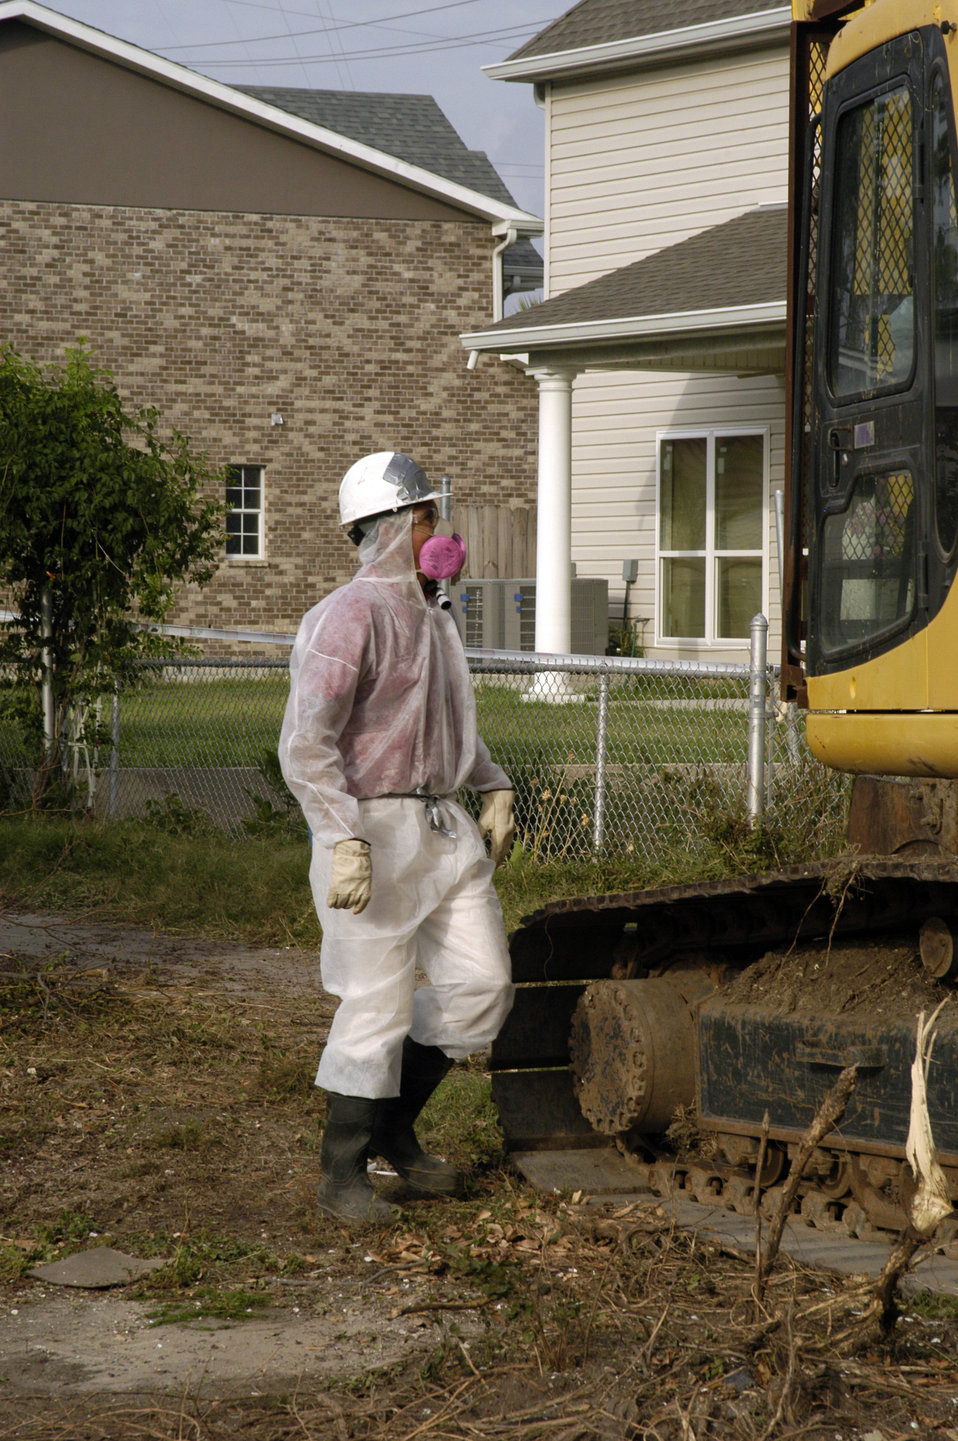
Many of the older homes and buildings in the New Orleans, LA, locale that were destroyed by Hurricane Katrina contained asbestos material (i.e. asbestos roofing tiles, transite siding, insulation, floor tiles, and popcorn ceilings). The U.S. Army Corps of Engineers (USACE) was mandated to follow strict environmental protocols in the demolition of these homes that were designated Regulated Asbestos Containing Material (RACM) demolitions. Personnel working inside the “hot zone” wore special suits with a respirator to prevent ingestion of asbestos particulates that might become airborne during the demolition project.